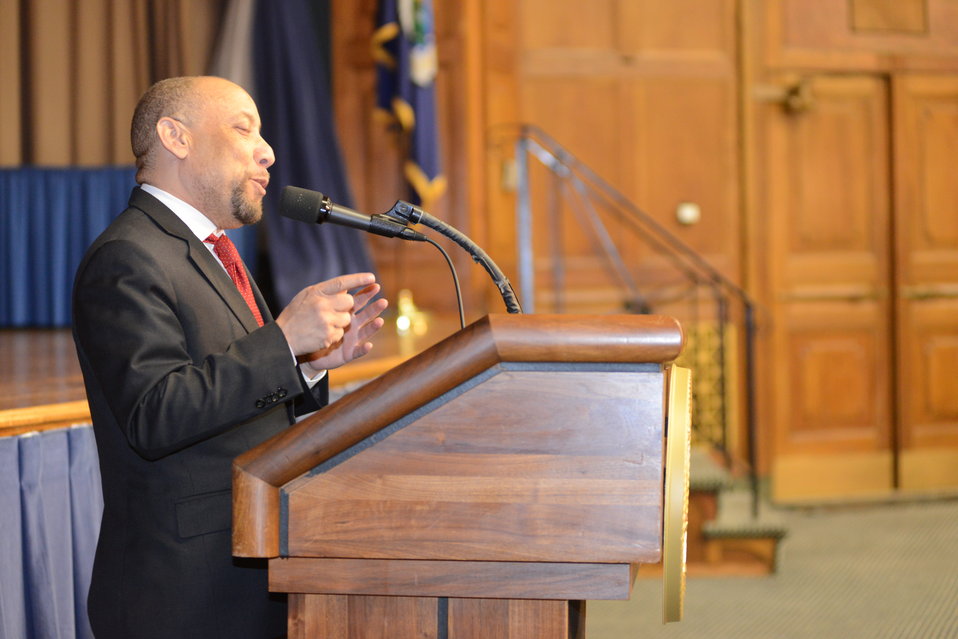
National Gay and Lesbian Task Force Senior Counsel Kylar Broadus speaks at the 2014 Lesbian/Gay/Bisexual/Transgender (LGBT) Pride Observance event held in the Jefferson Auditorium at USDA in Washington, D.C. on Thursday, Jun. 5, 2014.